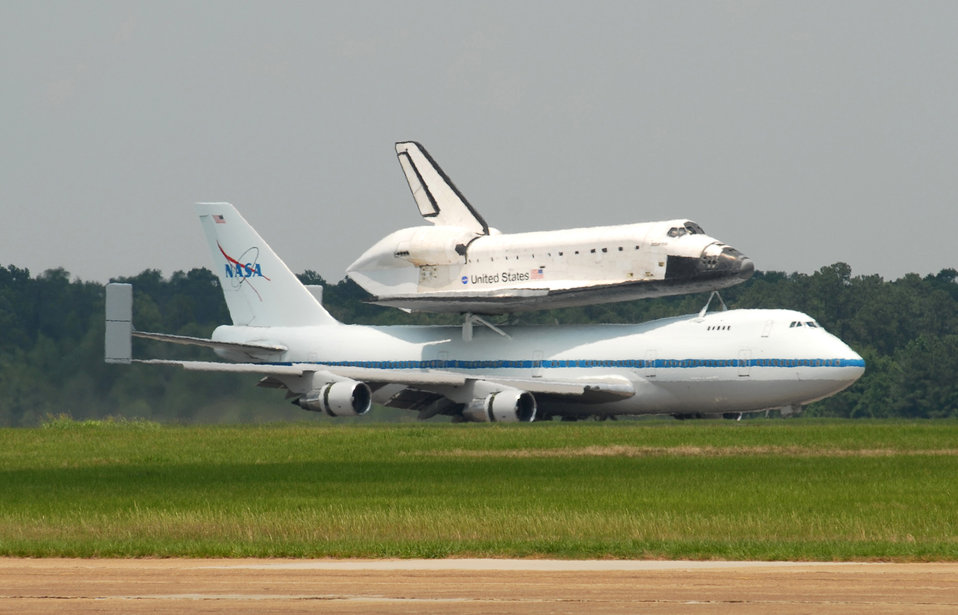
Photo essay: Shuttle transitions through Air Force bases

Space Shuttle Atlantis riding atop a NASA-modified Boeing 747 Shuttle Carrier Aircraft taxies after landing June 2 at Columbus Air Force Base, Miss. Columbus AFB was the shuttle's final stop for fuel before finishing its journey to Kennedy Space Center, Fla.